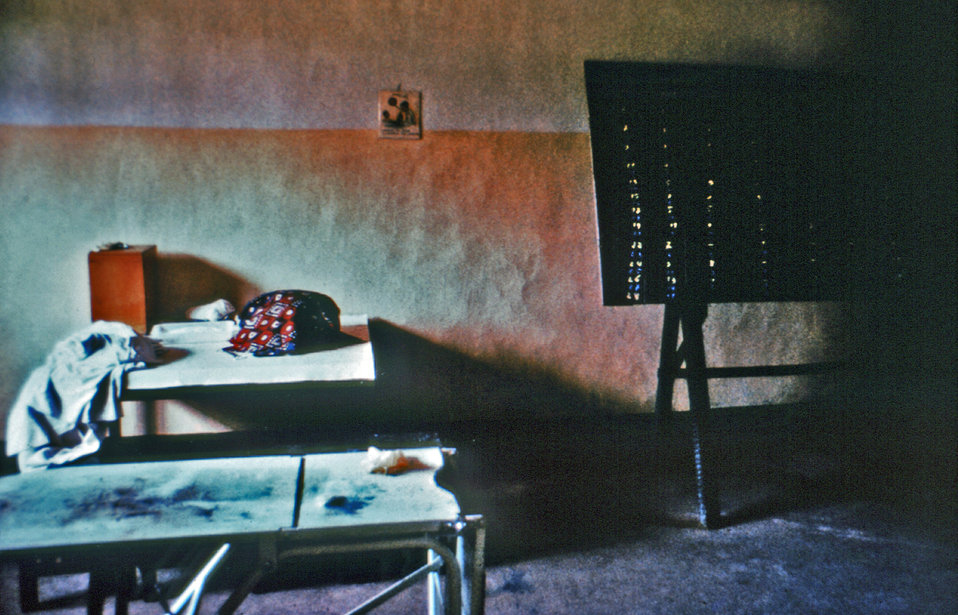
This 1976 photograph depicted the maternity ward of a Yambuku, Zairan, hospital captured after the death of staff members during the Ebola outbreak in August of that year.